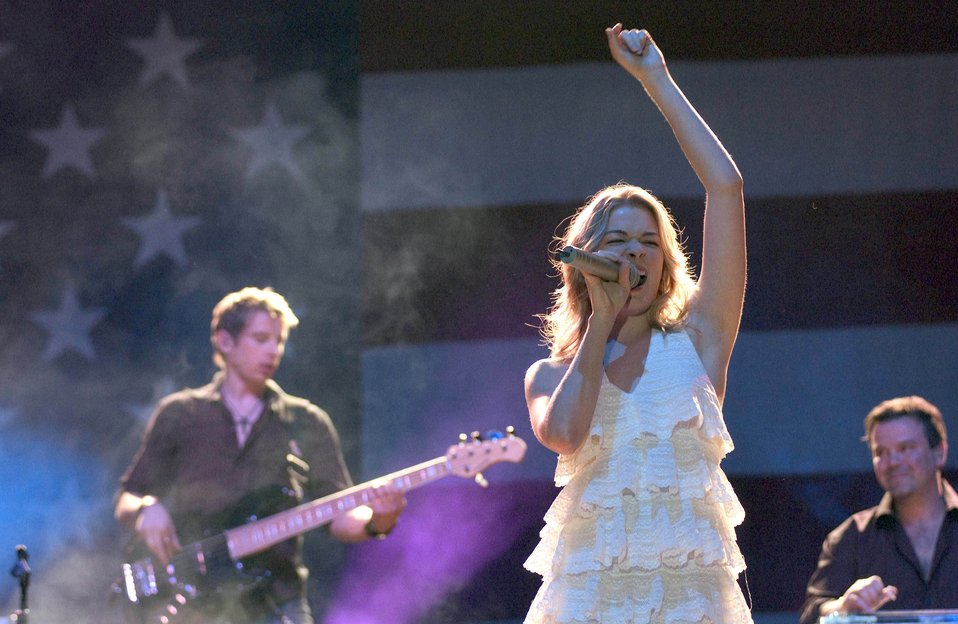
Rimes with Ramstein

RAMSTEIN AIR BASE, Germany -- Country/pop singer LeAnn Rimes performs a free concert for Airmen here Sept. 23.